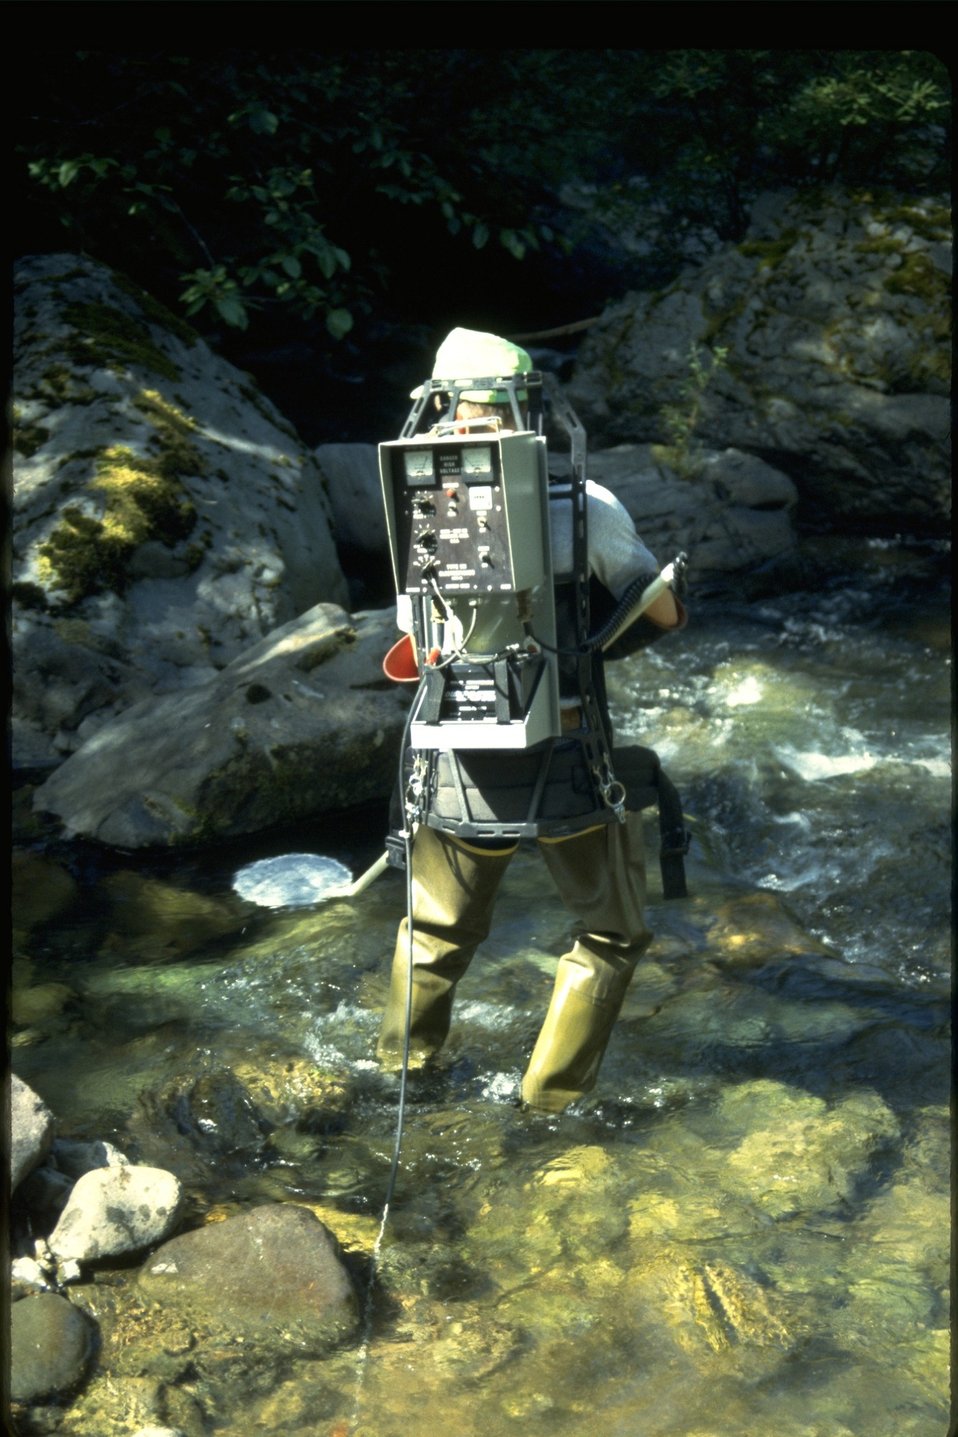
Elijah using electro shocker for fish population study.